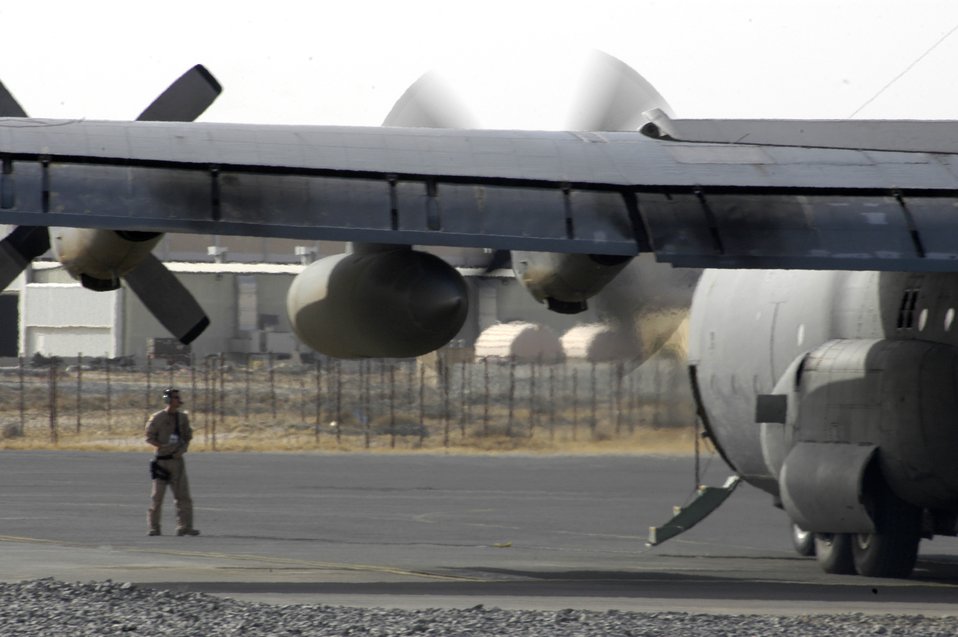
Mighty Hercules

Aircrew and maintainers go over final pre-flight checks on a C-130 Hercules before a mission at a deployed location in Southwest Asia on Tuesday, June 20. The Airmen are with the 386th Air Expeditionary Wing.